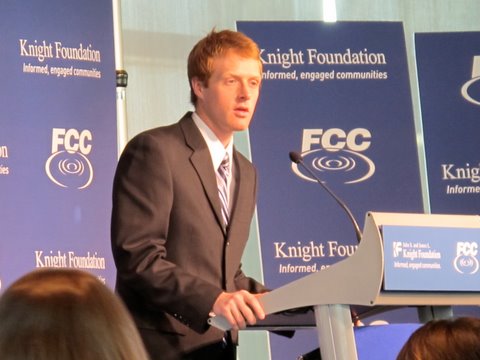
Alex Kurt is an AmeriCorps volunteer with the Community Technology Empowerment Project in St. Paul, Minn. speaking at America's Digital Inclusion Summit, March 9, 2010.